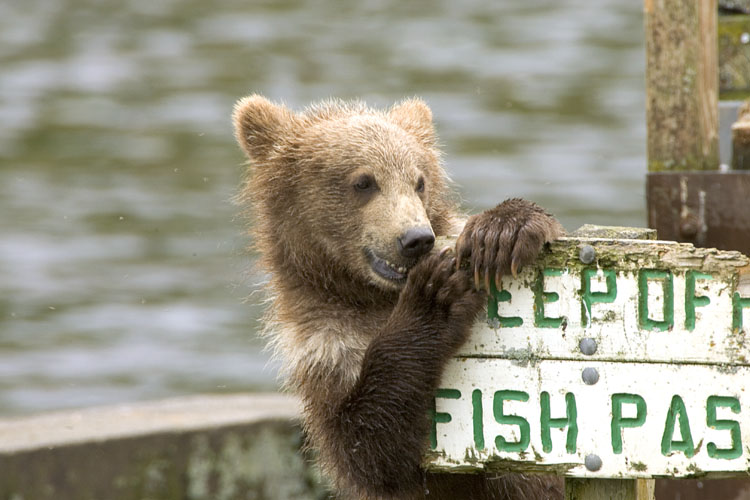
Bears of Kodiak Refuge

Fish Pass Kodiak bear cub doing some sign repairs.